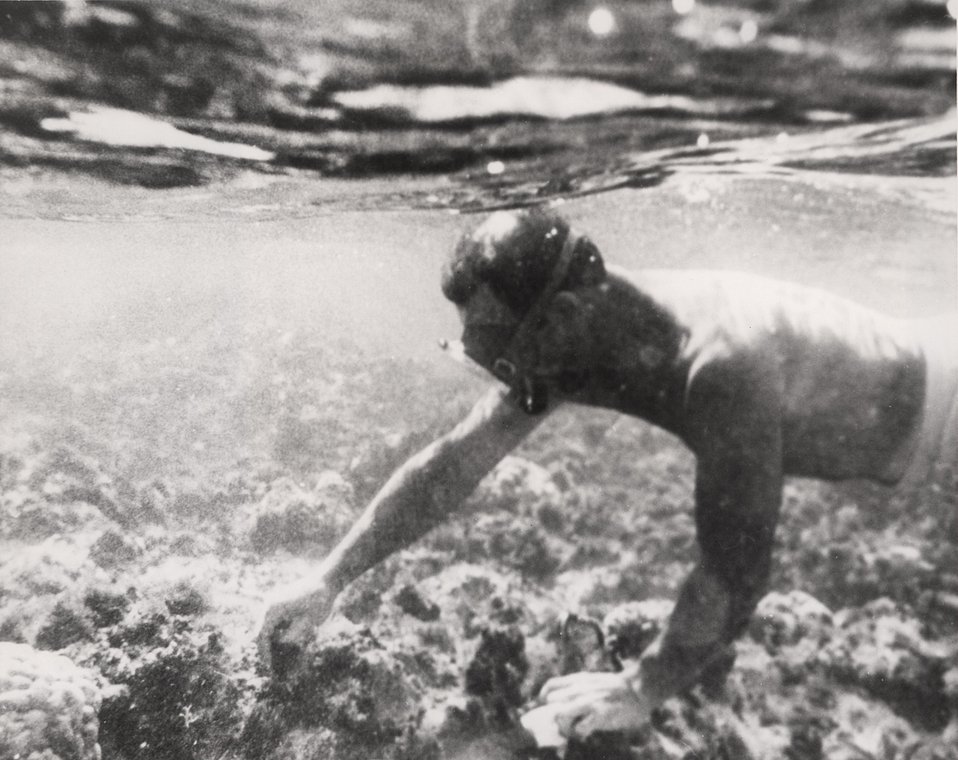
Six years after nuclear testing scientists evaluate the condition of the Bikini and Eniwetok Atolls.